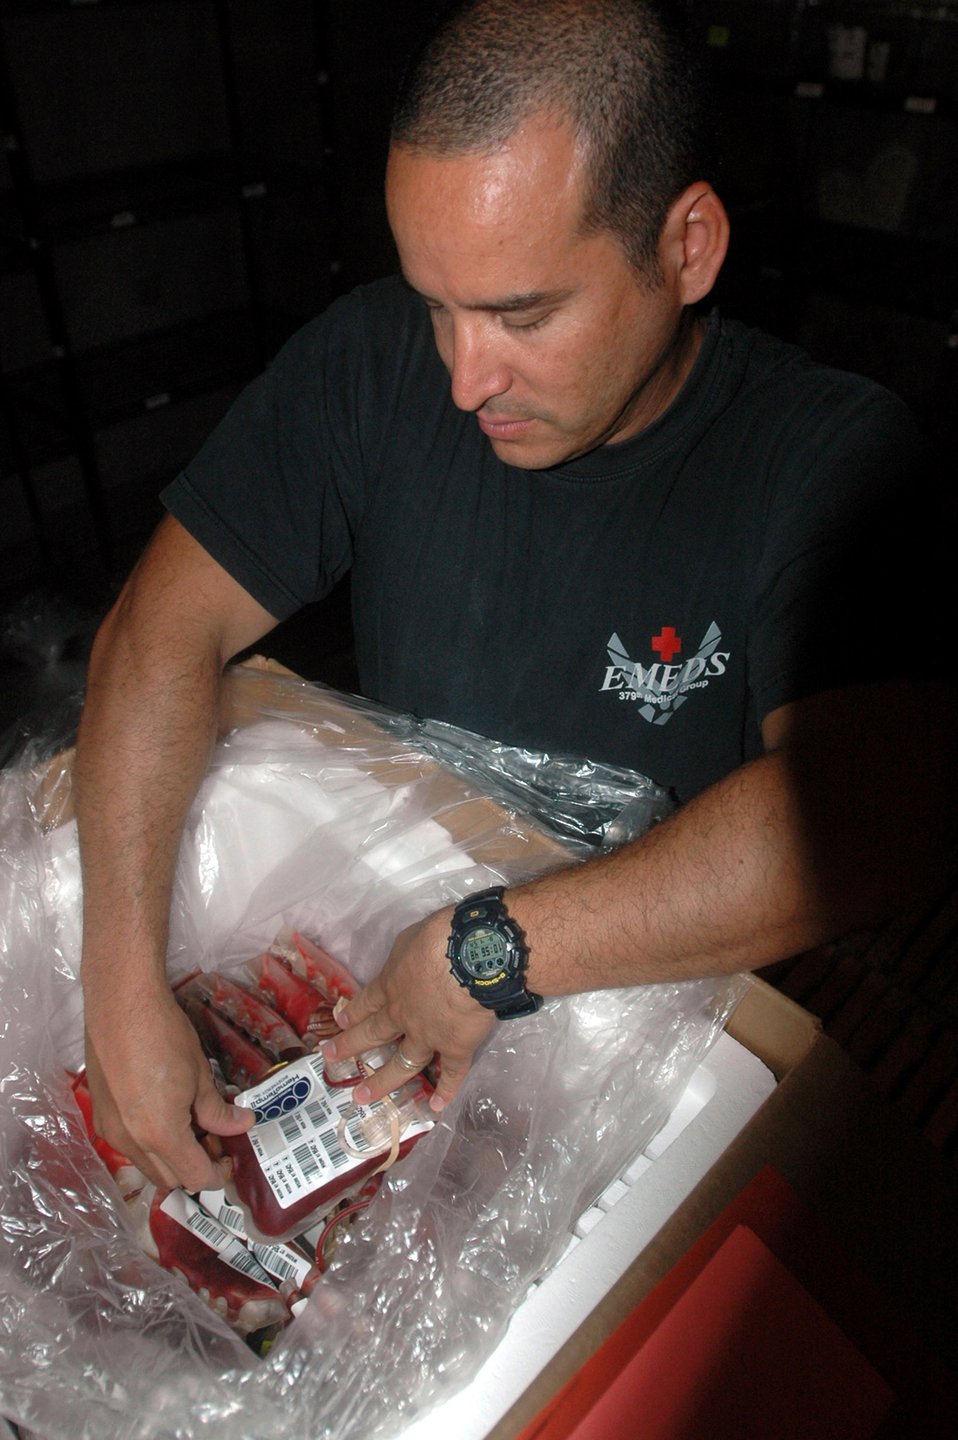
Blood center supports U.S., coaltion warfighters

Tech. Sgt. John Joanidas attaches a thermometer to units of blood waiting to be processed Aug. 4 in Southwest Asia. The specially designed thermometer is one of many tools the blood transshipment center members use to keep blood fresh. Sergeant Joanidas is assigned to the 379th Expeditionary Medical Group.